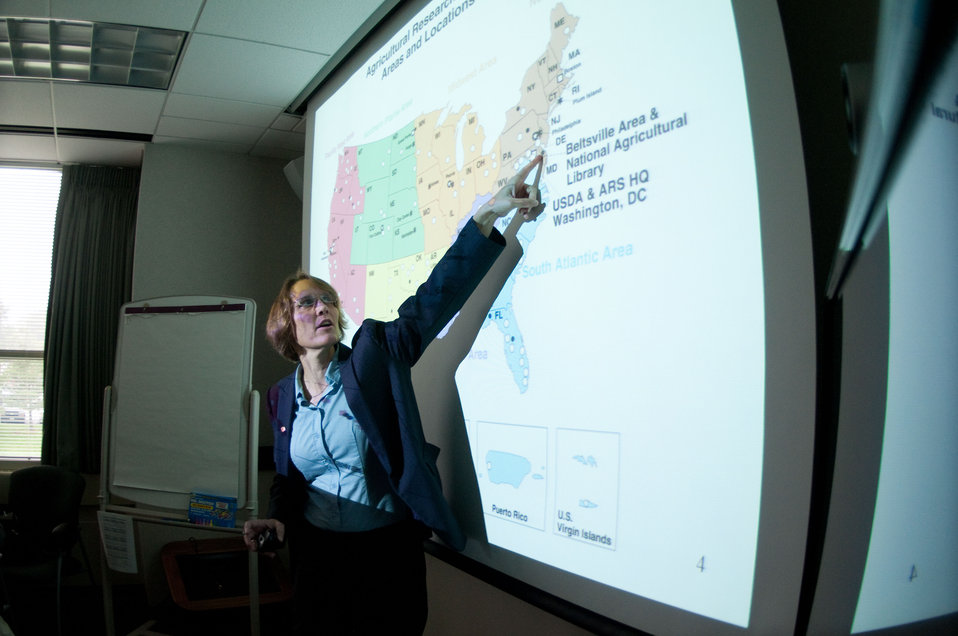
U.S. Department of Agriculture (USDA), Agriculture Research Service (ARS), International Research Program's Jennifer Woodward-Greene, spoke about the organization of USDA and ARS with the Afghan Ministry of Agriculture's Borlaug Fellows at the George Washington Carver Center, in Beltsville, MD on Wednesday Sept. 21, 2011.